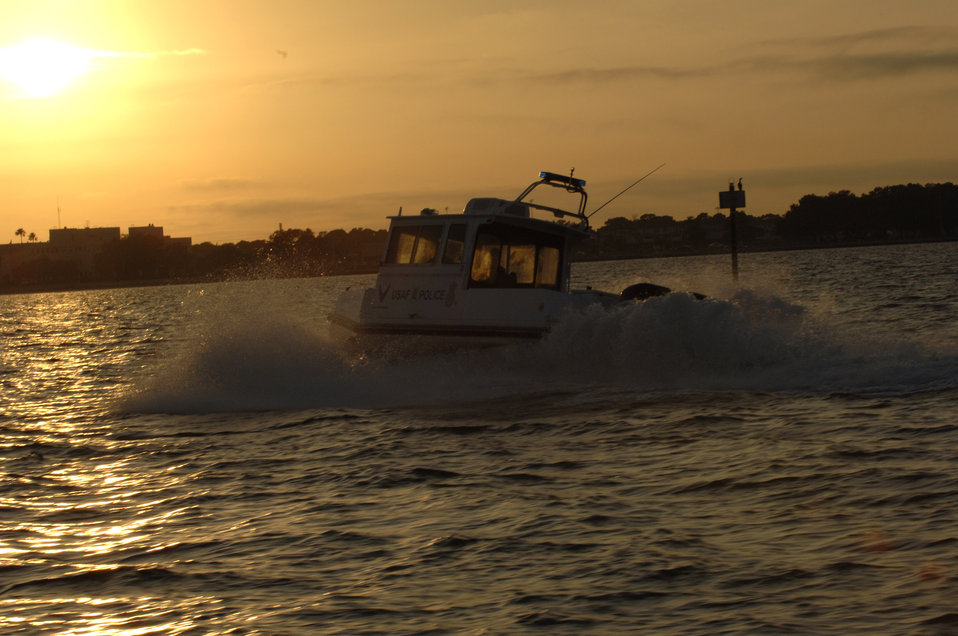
Bay watch

Members of the 6th Security Forces Squadron boat patrol at MacDill Air Force Base, Fla., police Tampa Bay Nov. 27. The 6th SFS is one of the few security forces squadrons in the Air Force to have a boat patrol and the only one to patrol overnight.